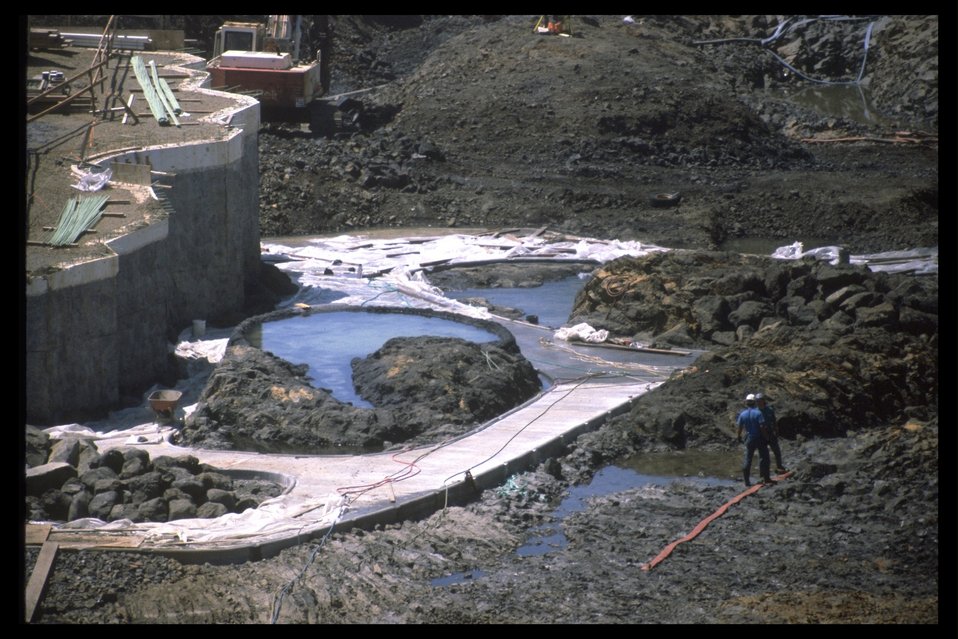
Construction of Quarry Cove tidepools.